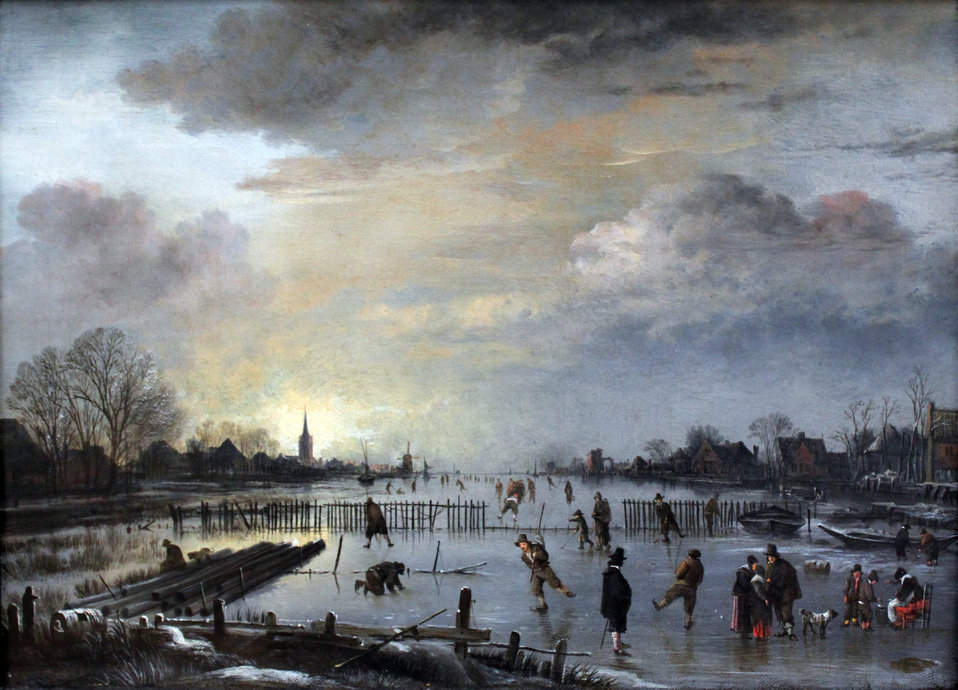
1658 van der Neer Winter Landscape with Skaters anagoria